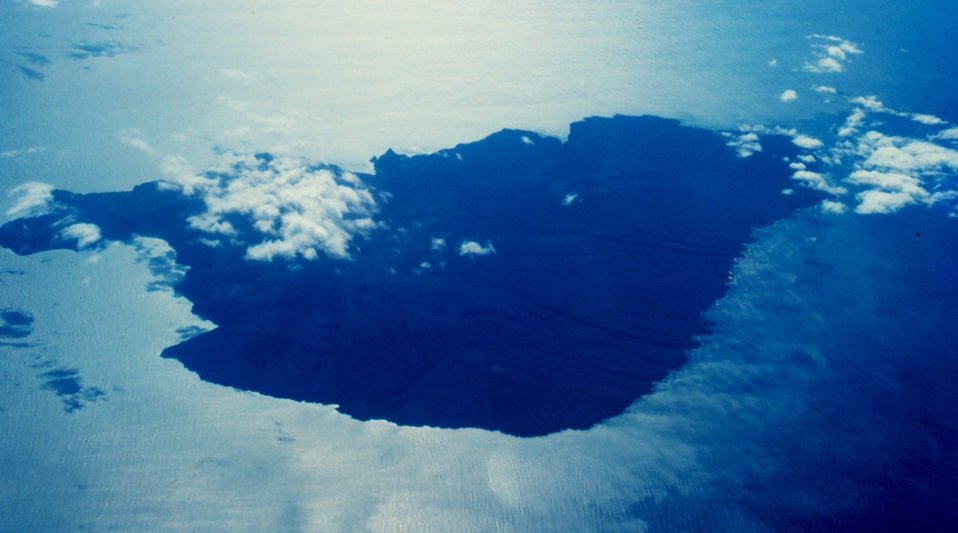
Kahoolawe from the air while flying over Alalakeiki Channel. Kanapou Bay is at center left in photo.